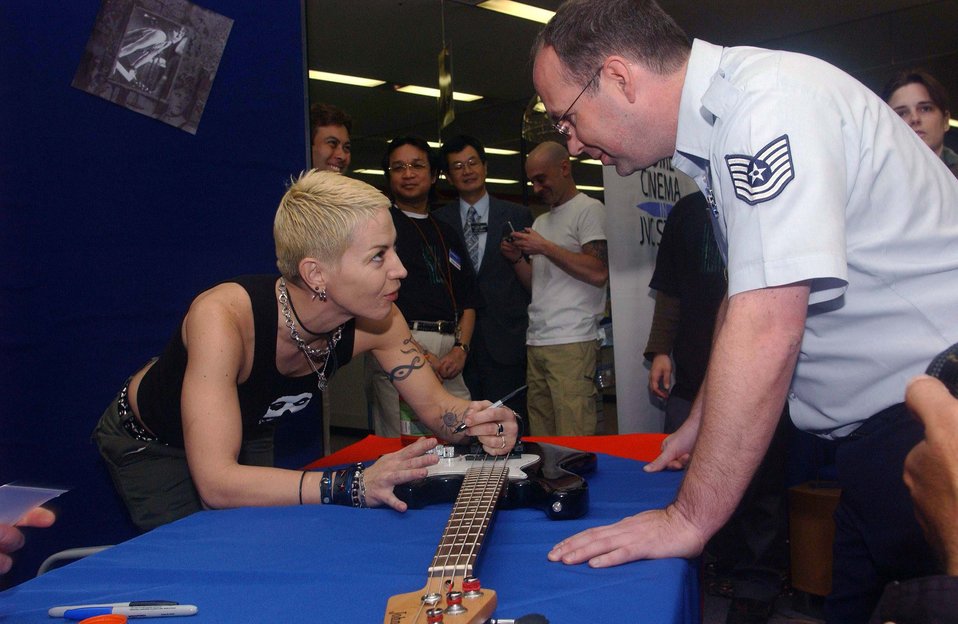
Jett-setter

YOKOTA AIR BASE, Japan -- Rock star Joan Jett signs a guitar for Tech. Sgt. Lewis Wells during her visit here. Jett and her band, the Blackhearts, are touring military bases in conjunction with her Japan 2003 tour. Her hits include